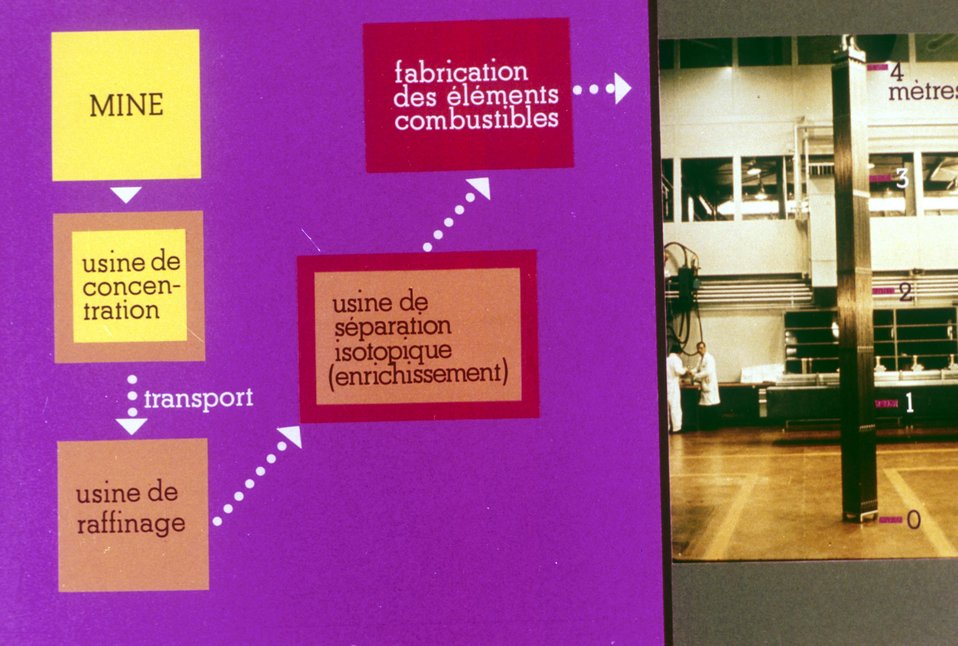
Cycle du combustible, 1Ìre partie : la prÐparation.